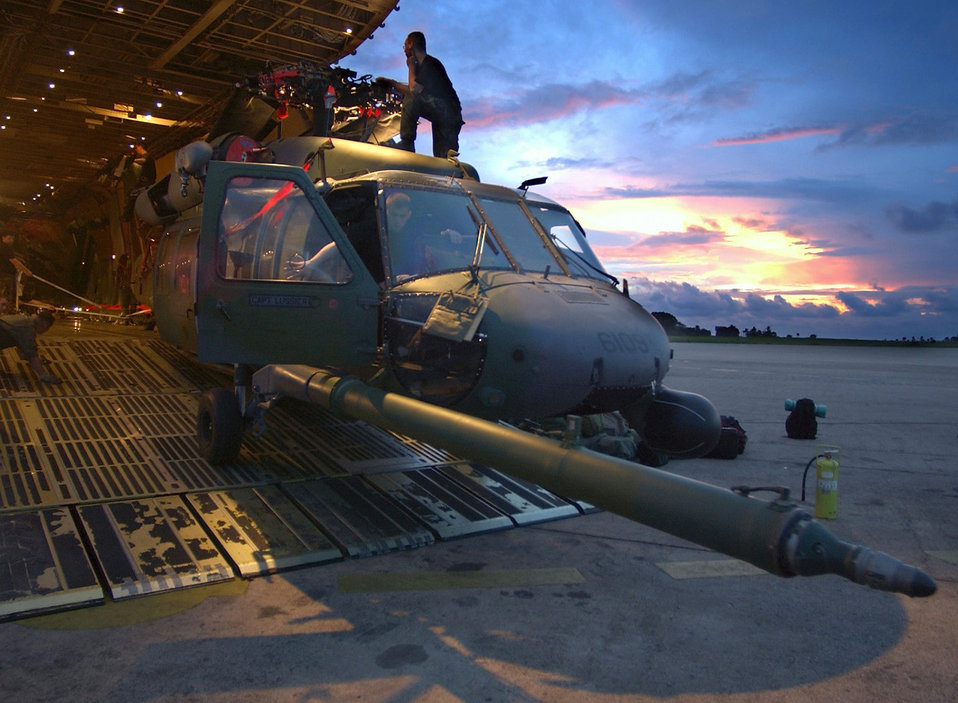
Daybreak in Africa

LUNGI, Sierra Leone -- Airmen unload an HH-60G Pave Hawk helicopter from a C-5 Galaxy after arriving here July 13 from Naval Air Station Keflavik, Iceland. They are providing recovery and emergency evacuation support for the humanitarian assistance survey team in Liberia. The HH-60G is deployed from the 56th Rescue Squadron at Keflavik, and the C-5 is from the 301st Airlift Squadron at Travis Air Force Base, Calif.